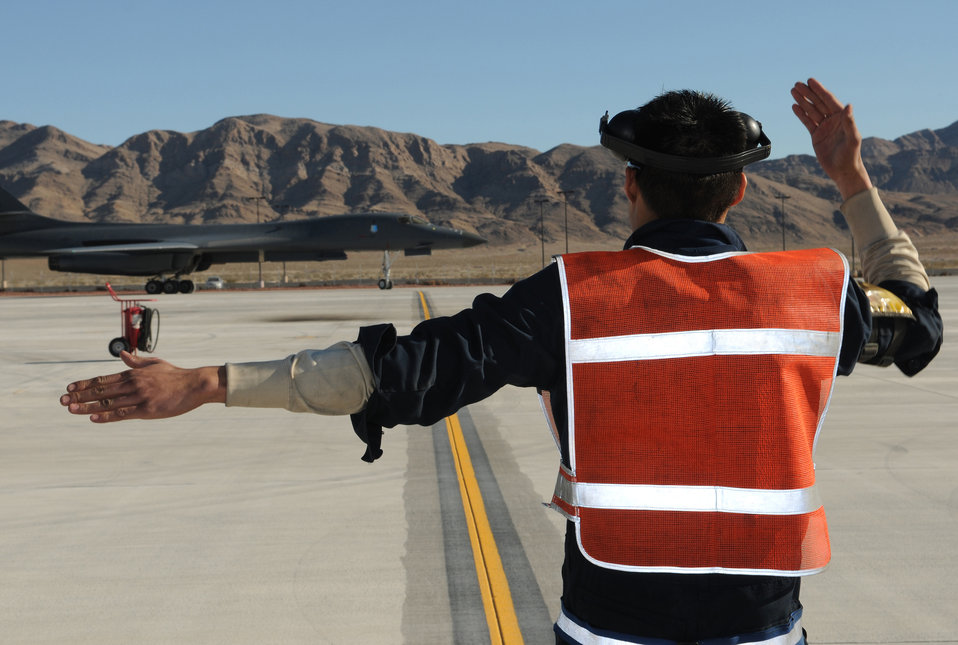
Red Flag 11-2

Senior Airman Kevin Faulds marshals a B-1 Lancer after a mission Jan. 26, 2011, at Nellis Air Force Base, Nev. Airman Faulds is deployed in support of Red Flag 11-2, a combined exercise that provides a realistic combat training environment to the U.S. and its allies. Airman Faulds is a 28th Aircraft Maintenance Squadron crew chief.